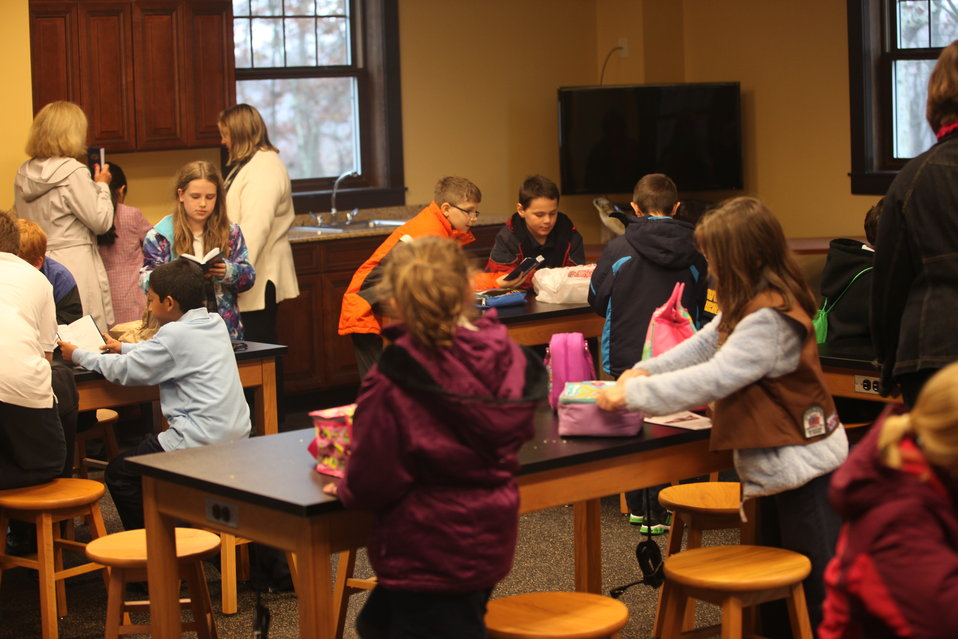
First kids to use the lab room at the visitor center

First of many school groups to use the facility.....